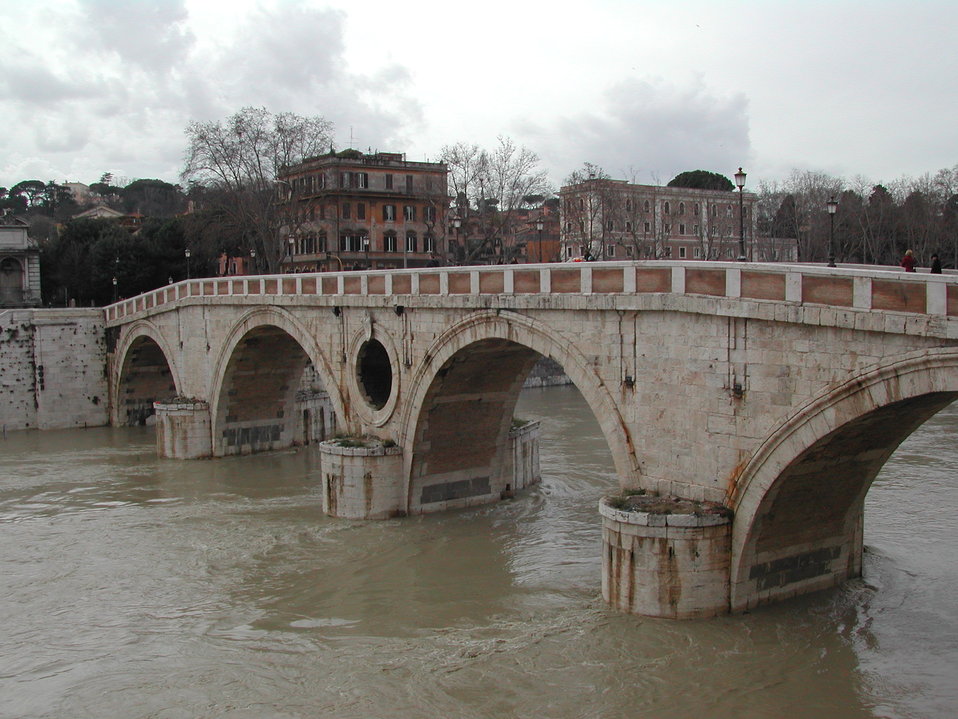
0403 - Tevere in piena 08